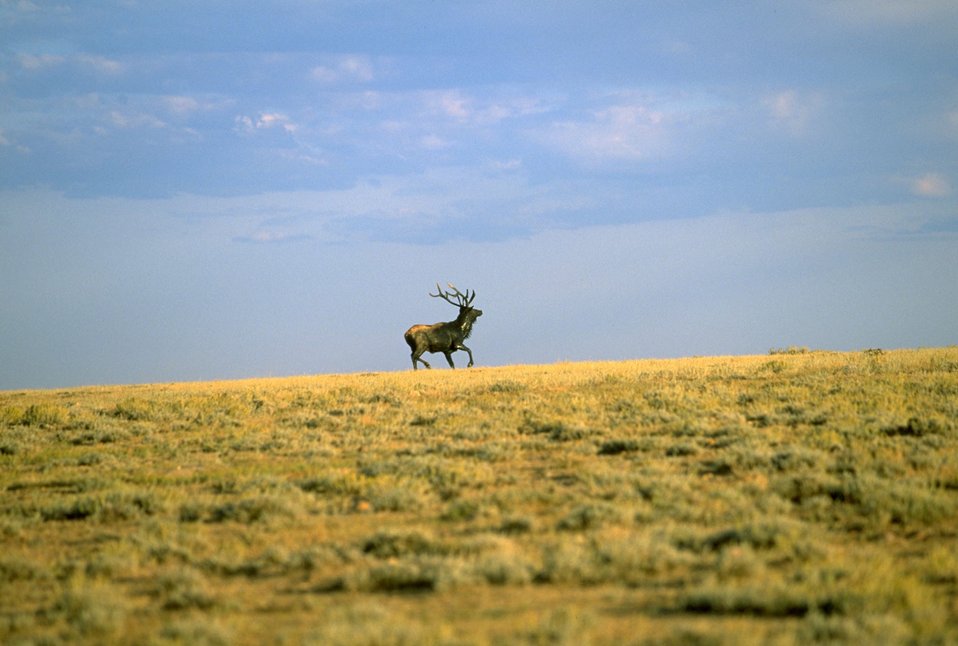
Elk in velvet